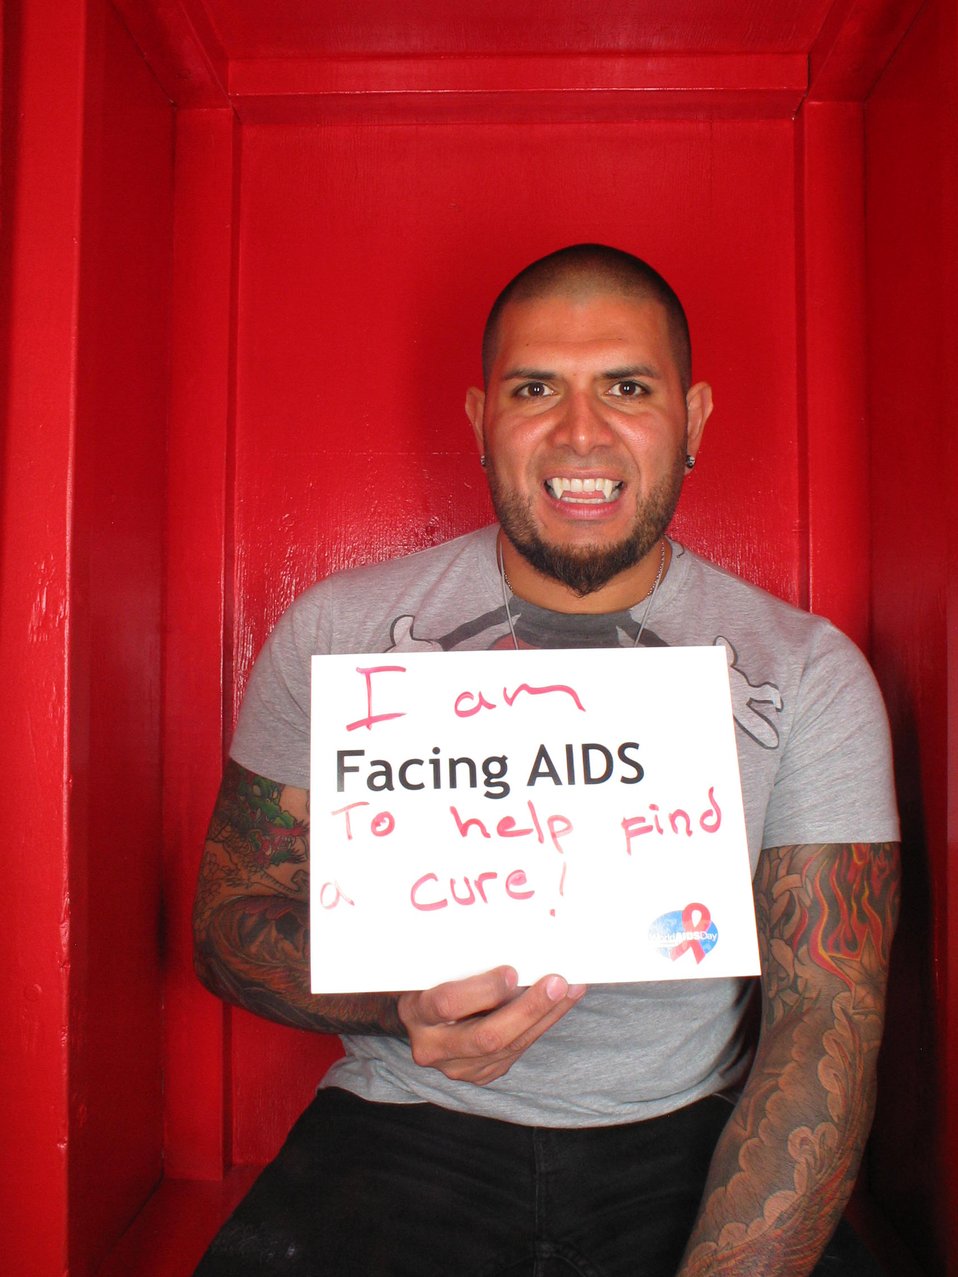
I am Facing AIDS to help find a cure!